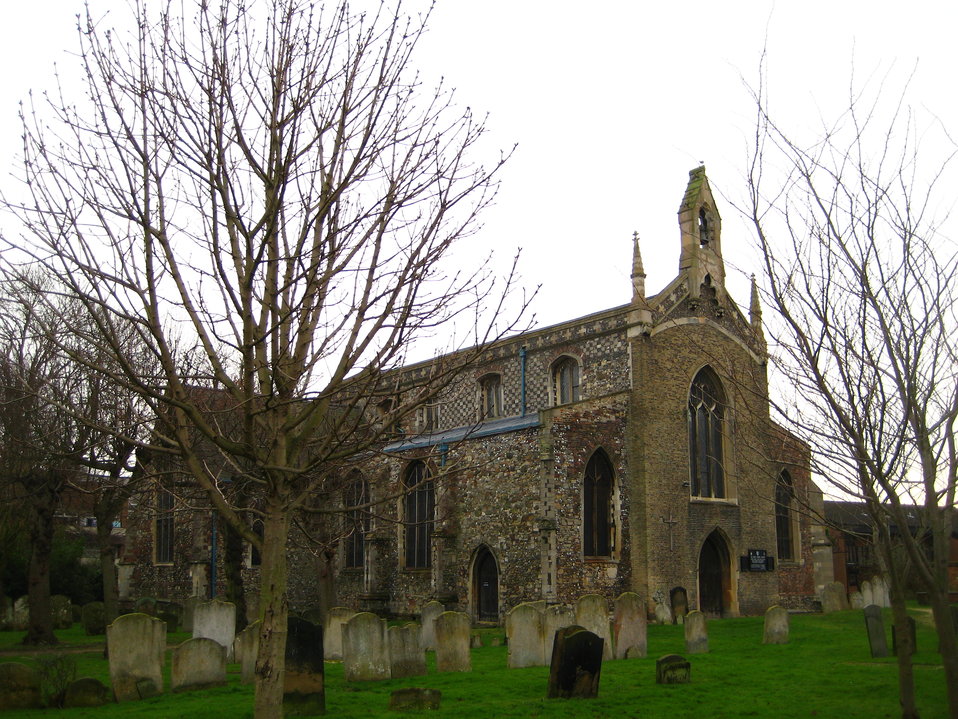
All Saints Church in en:King's Lynn